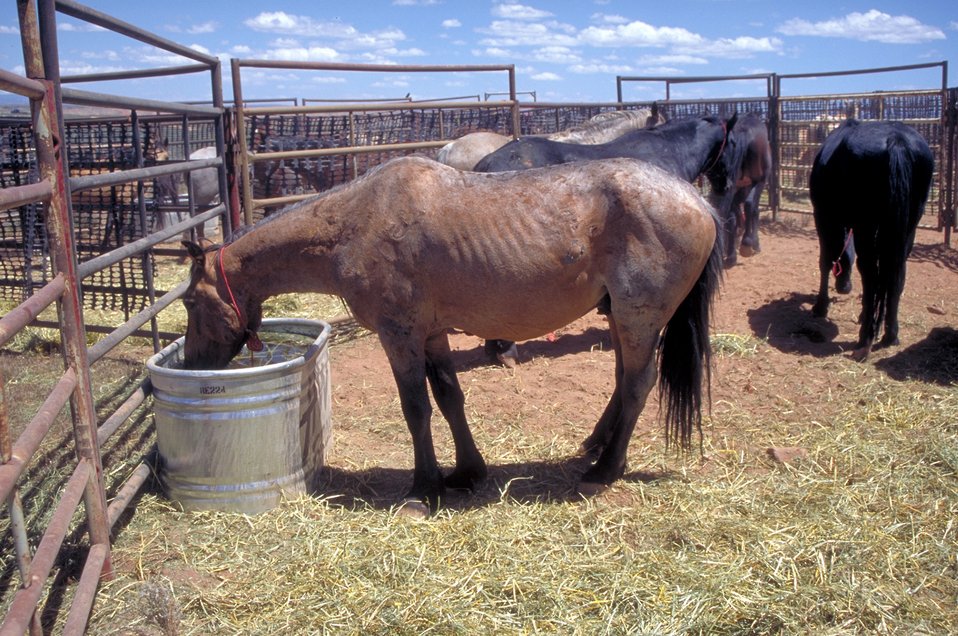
EIA testing near Vernal, Utah.